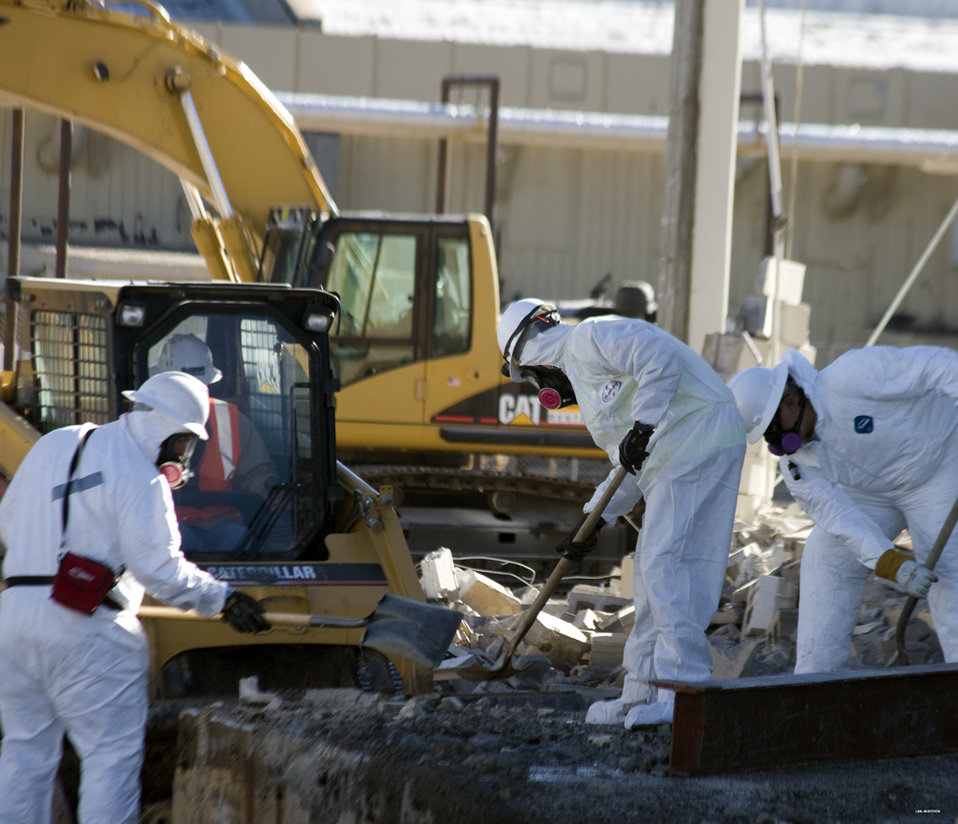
Demolition Work at LANL